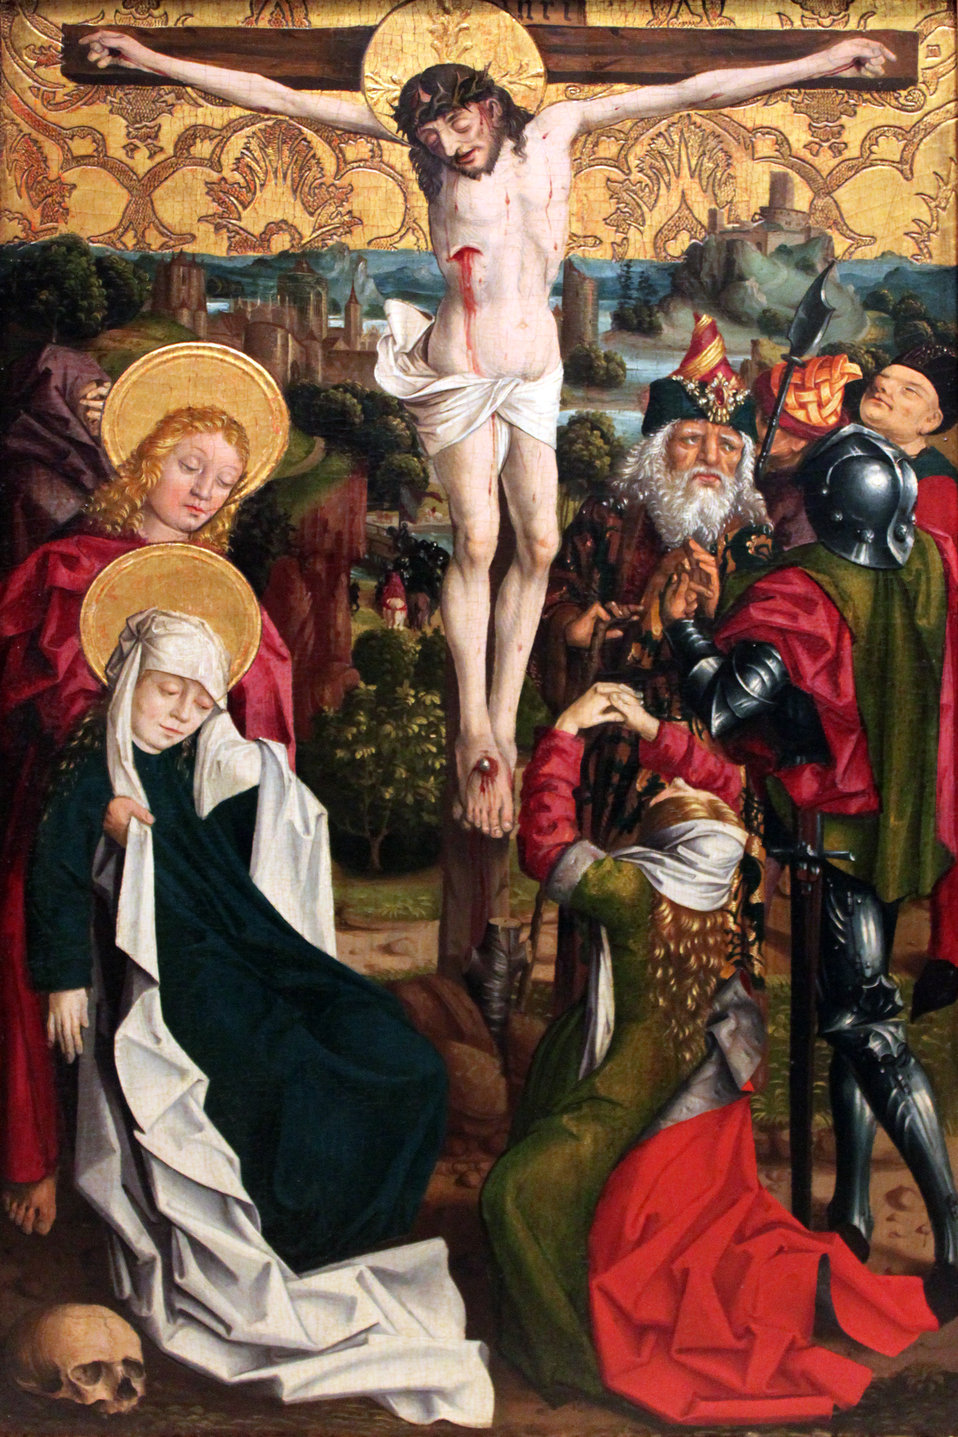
1485 Meister der Ilsung-Madonna Kreuzigung Christi anagoria